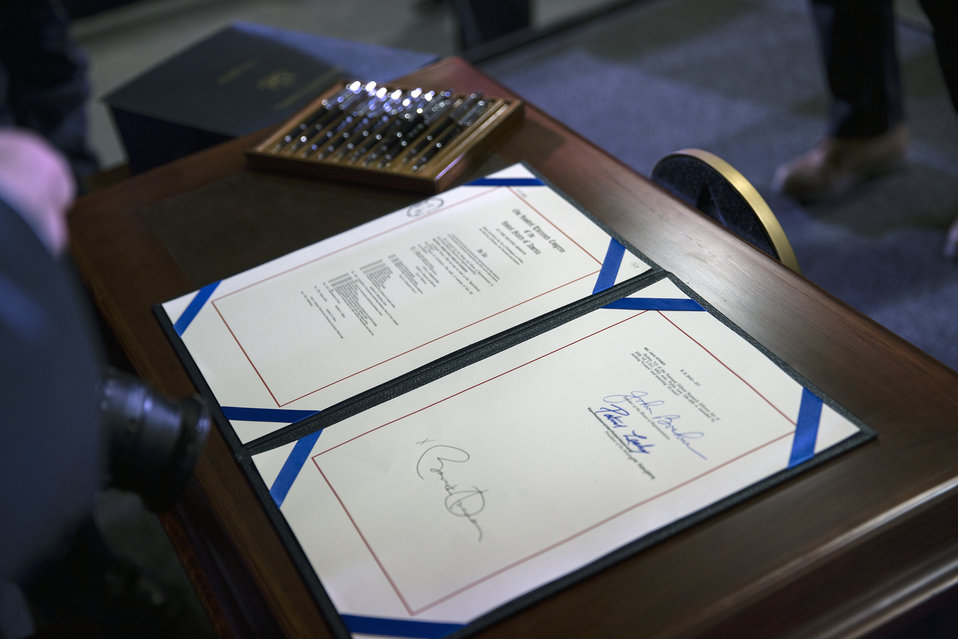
President Barack Obama signs the Agricultural Act of 2014 at Michigan State University in East Lansing, MI on Friday, Feb. 7, 2014. The President spoke on the importance of the act to America’s economy, detailing the progress over the last five years and how this bill will build on that progress.